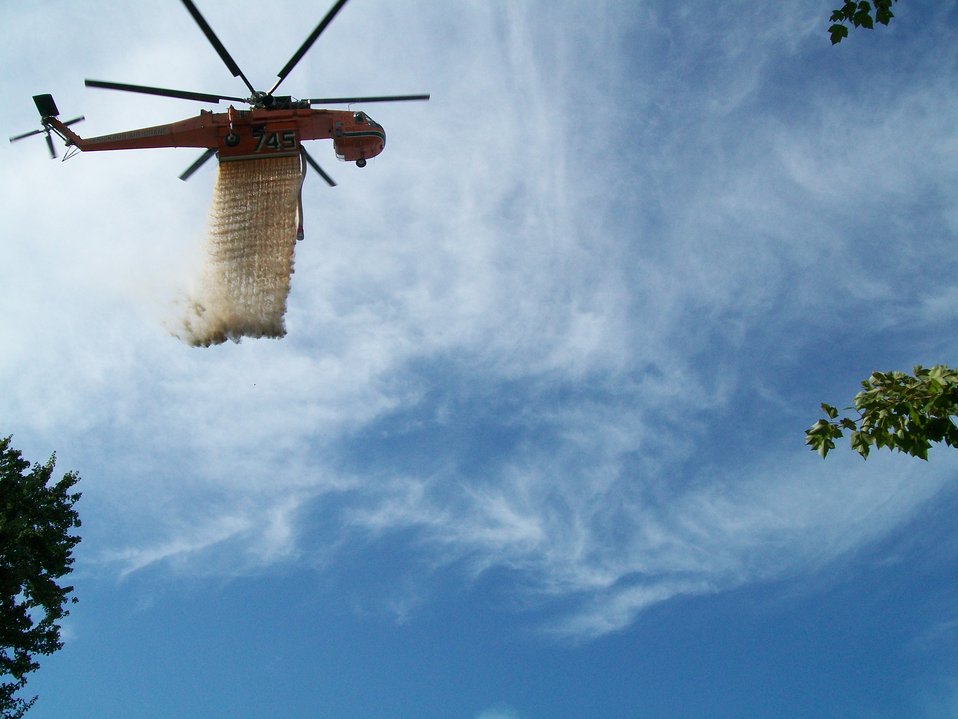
C 54 Sikorsky Sky Crane water drop

Suffolk, VA, Aug. 2011: A C54 Sikorsky Skycrane helicopter drops close to 1,000 gallons of water on the Lateral West Fire burning on Great Dismal Swamp National Wildlife Refuge. Air operations support the work of firefighters on the ground.